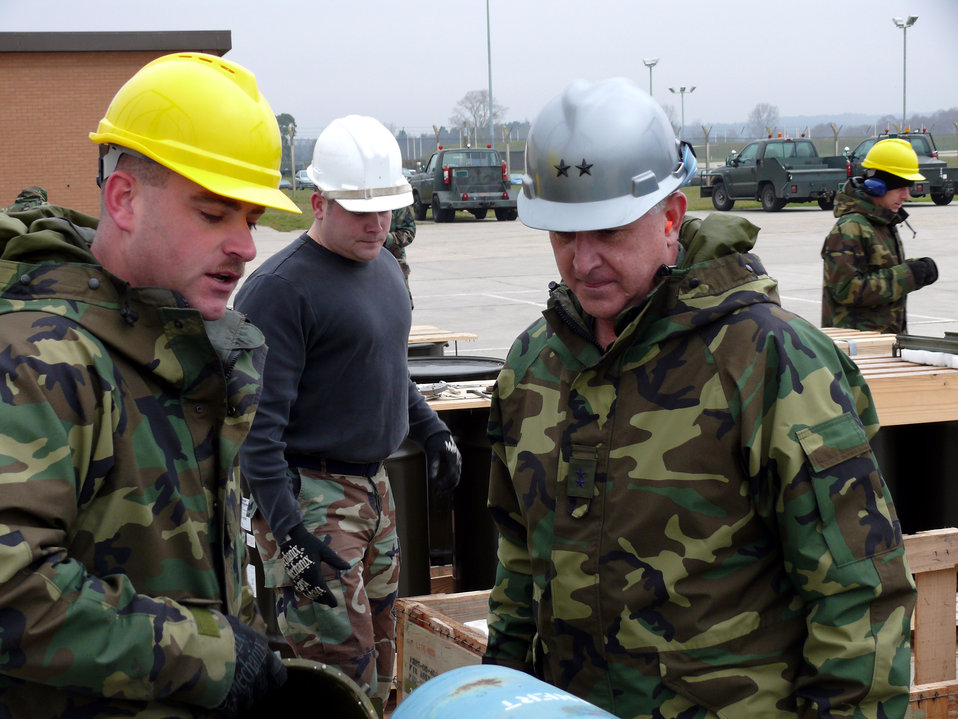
Officers go to bomb-building how-to course

Staff Sgt. Mark Dale (left), a 48th Fighter Wing Munitions Specialist, shows the 3rd Air Force vice commander, Maj. Gen. Paul Fletcher, the how to assemble a Mark 82 bomb. The demonstration is part of an eight-hour munitions building course held at Royal Air Force Lakenheath, England.